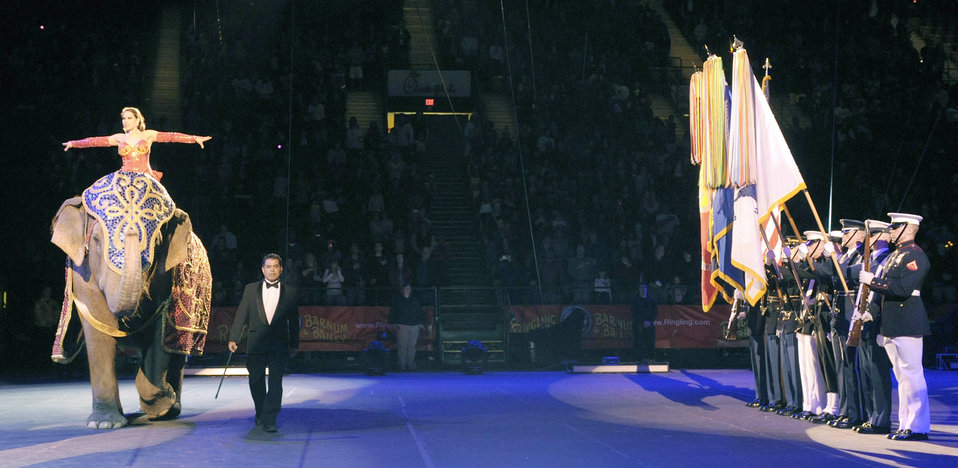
YOAFF & Circus

The Military District of Washington's Joint Color Guard present the flags as a two ton Asian elephant helps open the Ringling Bros. and Barnum & Bailey